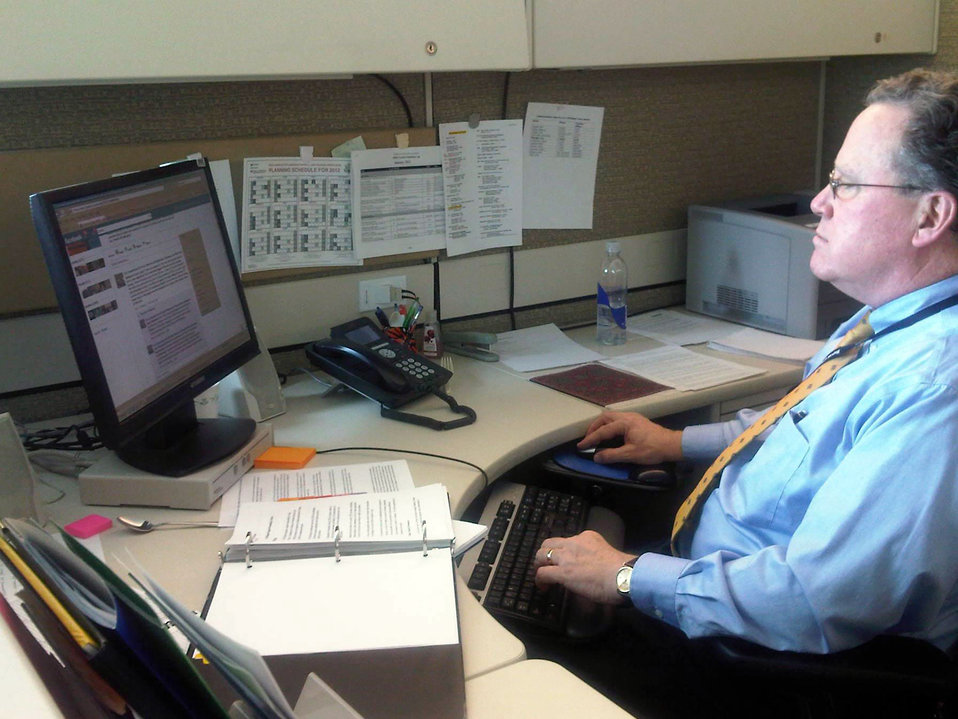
Acting Assistant Secretary Robinson Participates in a Live Facebook Chat

Acting Assistant Secretary of State for Population, Refugees, and Migration David Robinson responds to your questions in a live Facebook chat on the Bureau of Population, Refugees, and Migration's Facebook page at the U.S. Department of State in Washington, D.C., on January 24, 2012. The U.S. Department of State has designated January 2012 as 21st Century Statecraft month.